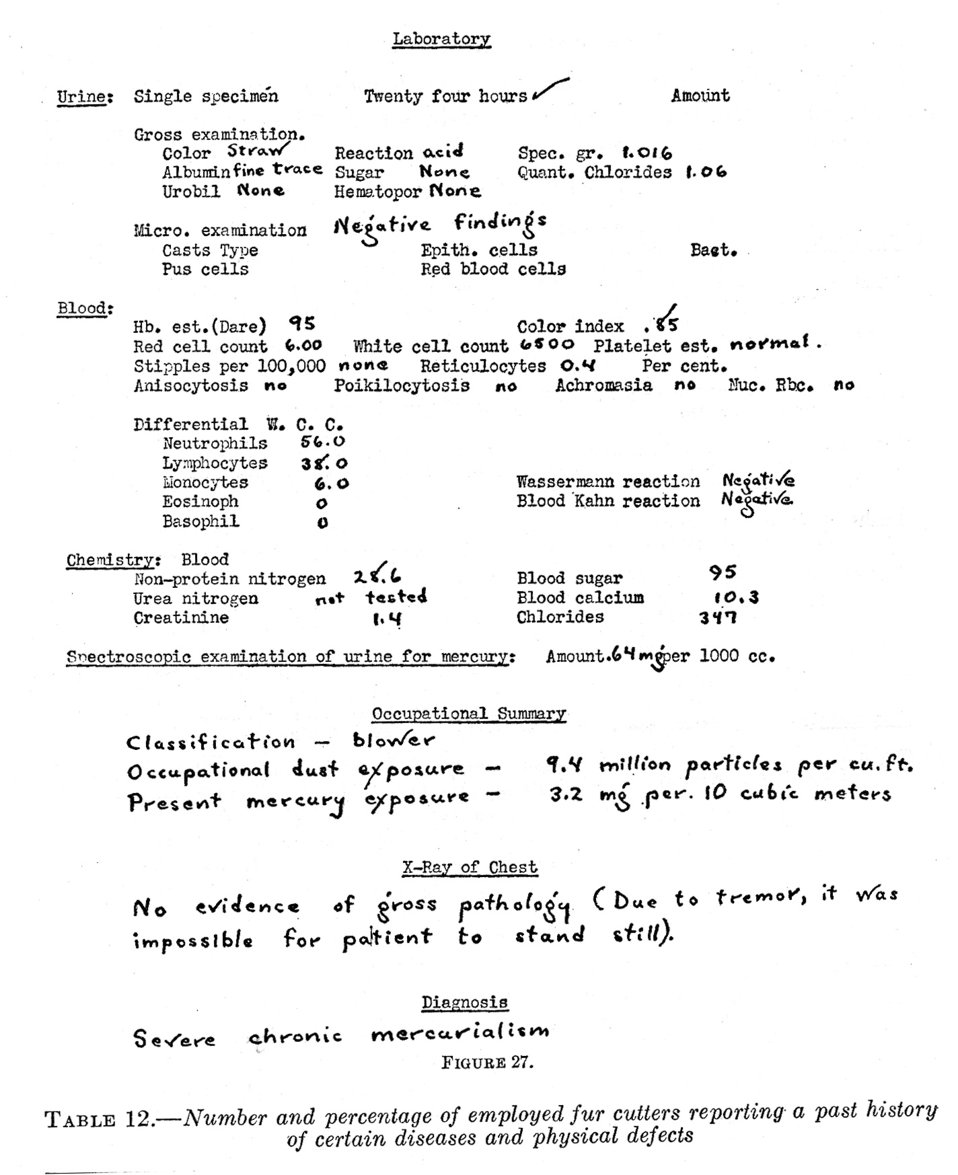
This historical image was provided by the Center for Disease Control's (CDC), National Institute for Occupational Safety and Health (NIOSH). Depicted, was a page from a written laboratory report, and medical summary, recorded during a history and physical examination of a fur cutter, who'd been exposed to mercury in a hat manufacturing plant. Fur processing involves the use of mercury in the form of mercury nitrate, which renders the fur suitable for manufacturing hats. If precautions are not taken, such as wearing a filtered breathing mask, or gloves, mercury exposure was quite likely, and could have lead to heavy metal poisoning, with severe pathologic neurological consequences. The image was published in the 'Public Health Bulletin', No. 234, Fig. 27, 1937.